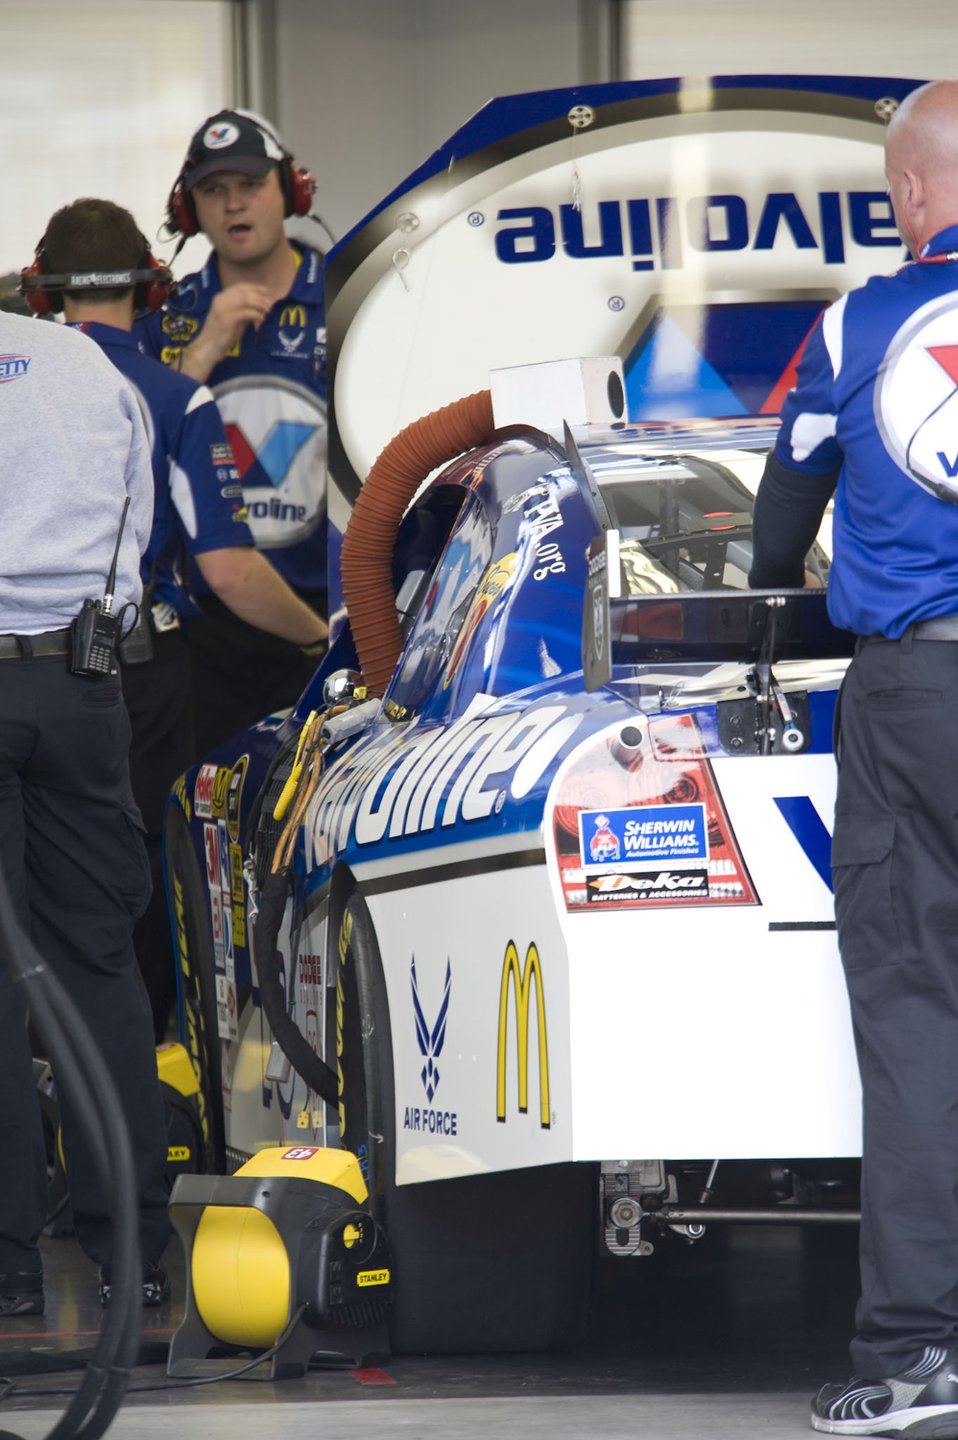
Air Force teams with NASCAR to aid recruiting

Crewmembers for the Air Force sponsored No. 43 Dodge make adjustments during the first Sprint Cup practice session Feb. 28 at Las Vegas Motor Speedway.